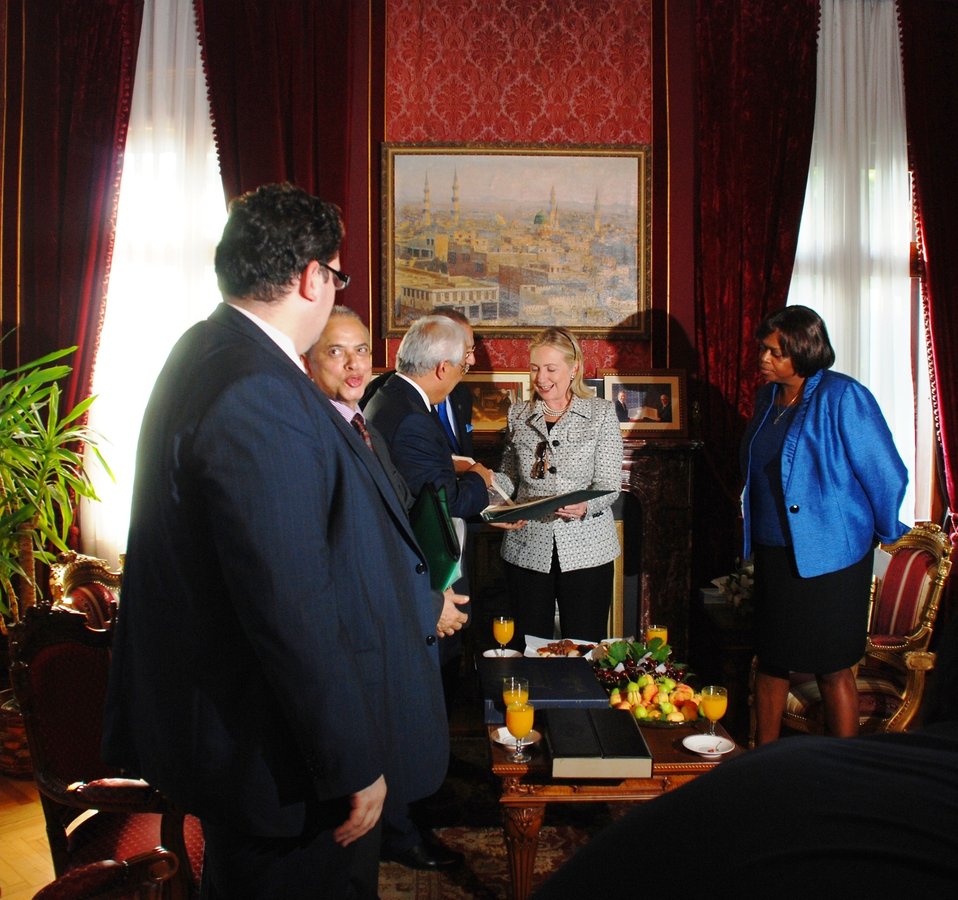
Secretary Clinton Meets With Secretary General of OIC Ihsanoğlu

U.S. Secretary of State Hillary Rodham Clinton meets with Professor Ekmeleddin Ihsanoğlu, Secretary General of OIC at IRCICA in Istanbul, Turkey, on July 15, 2011.